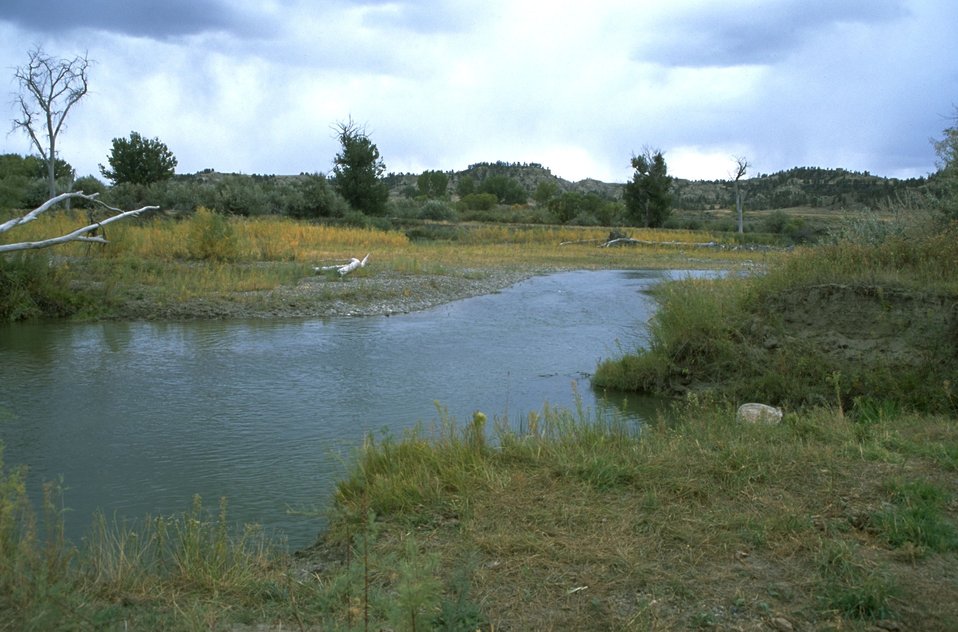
Yellowstone River Channel near the Howrey Island Recreation Area